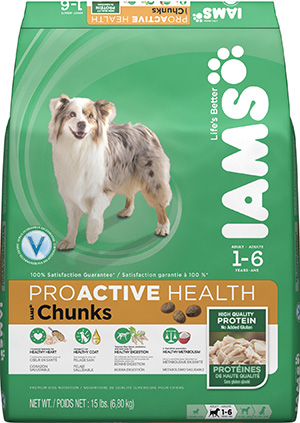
RECALLED – Dog and Cat foods - Dry

August 14, 2013 – Product Recall – P&G Voluntarily Recalls Limited Quantity of Dry Pet Food Due to Possible Health Risk.